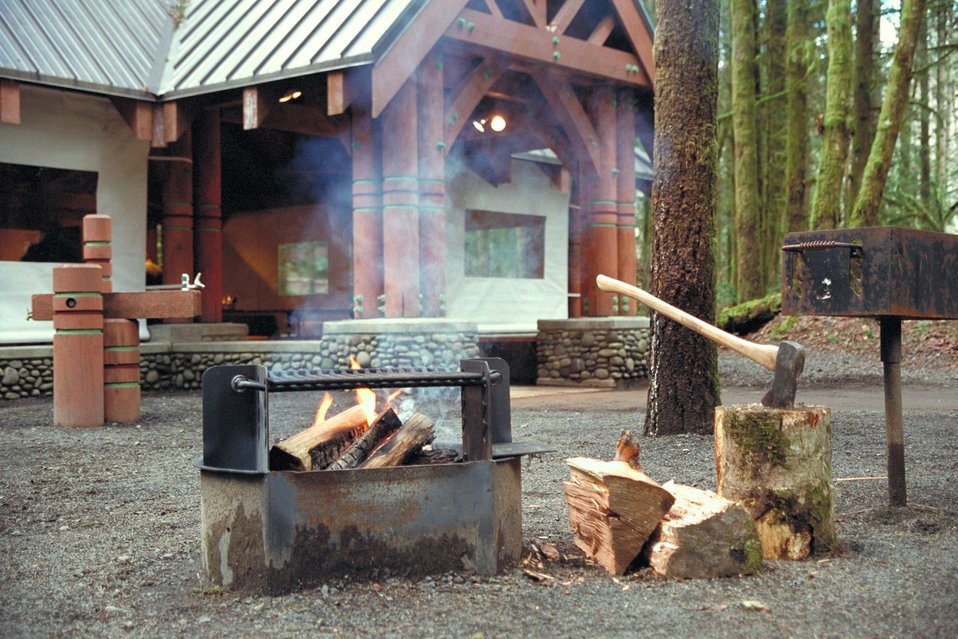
Cascade Stream Watch is an environmental education program conducted at BLM's Wildwood Recreation site.